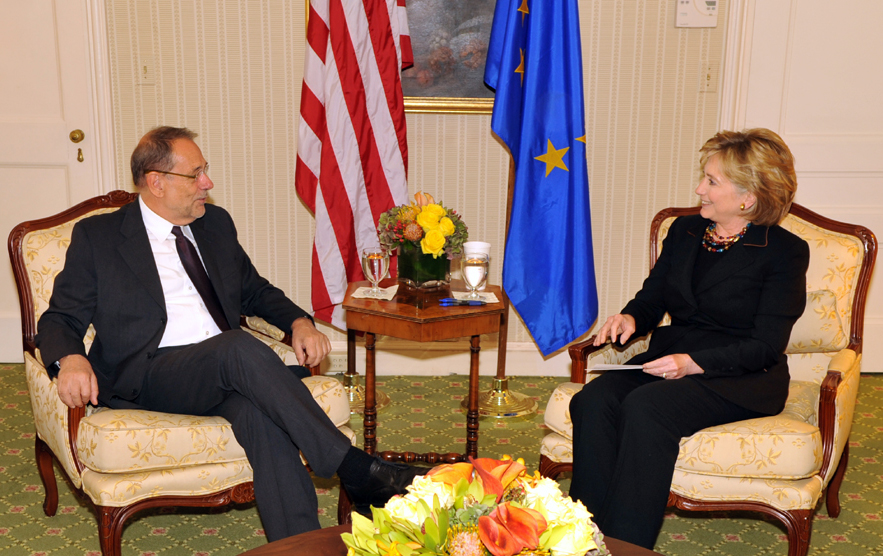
UNGA 2009: Secretary Clinton Meets With EU High Representative

U.S. Secretary of State Hillary Rodham Clinton meets with European Union High Representative Javier Solana at the Waldorf Astoria hotel during the 64th Session of the UN General Assembly in New York City, New York September 26, 2009.